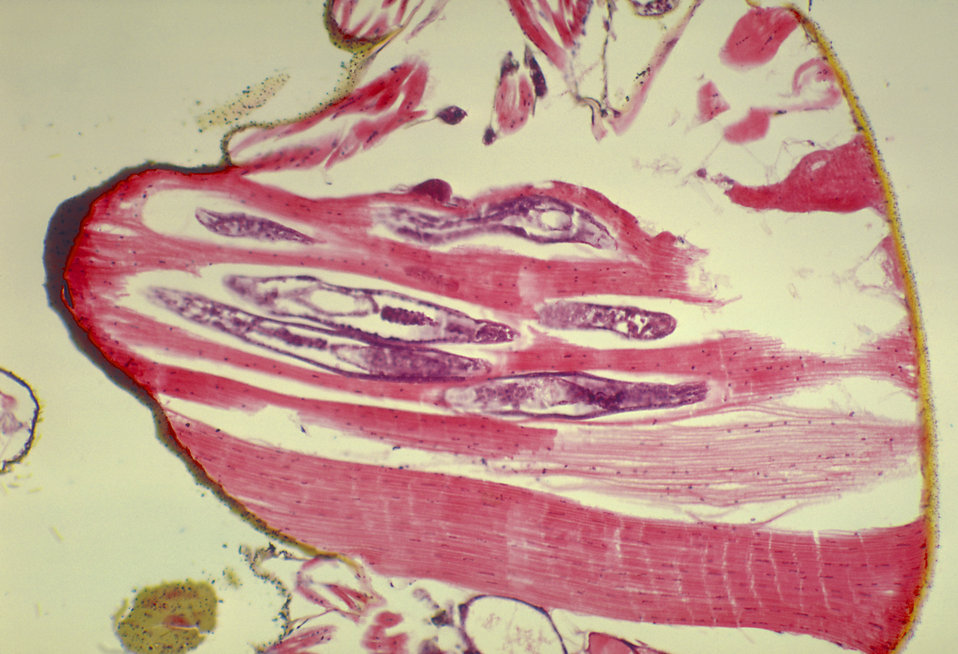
A photomicrograph revealing the histology of Onchocerca volvulus developing in a Black Fly, Simulium ochraceum.